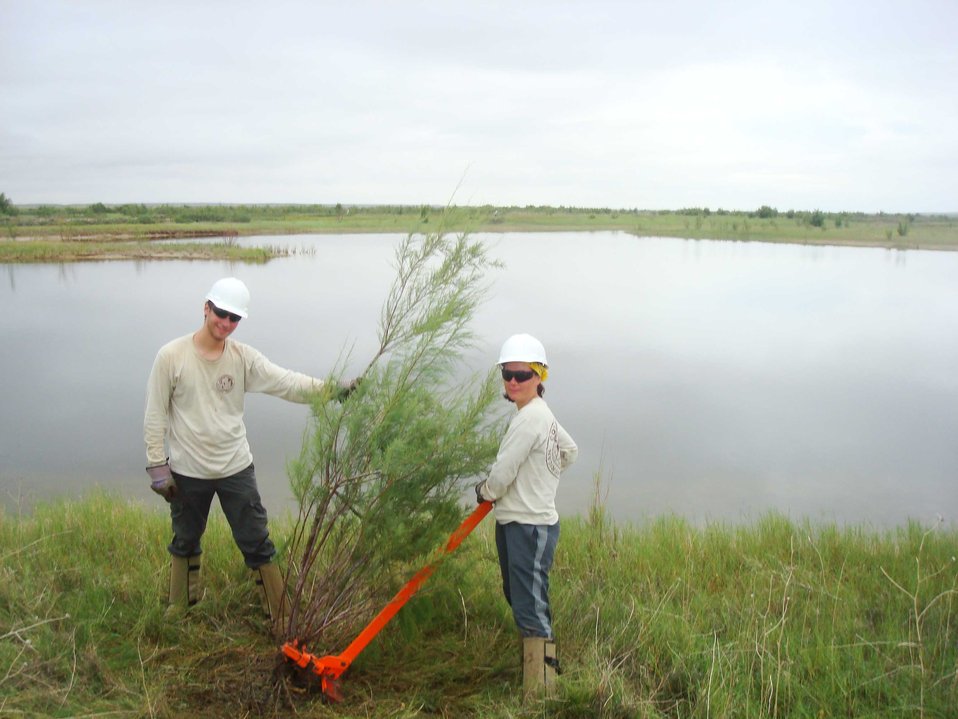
Bitter Lake Refuge, NM

Removing invasive salt cedar